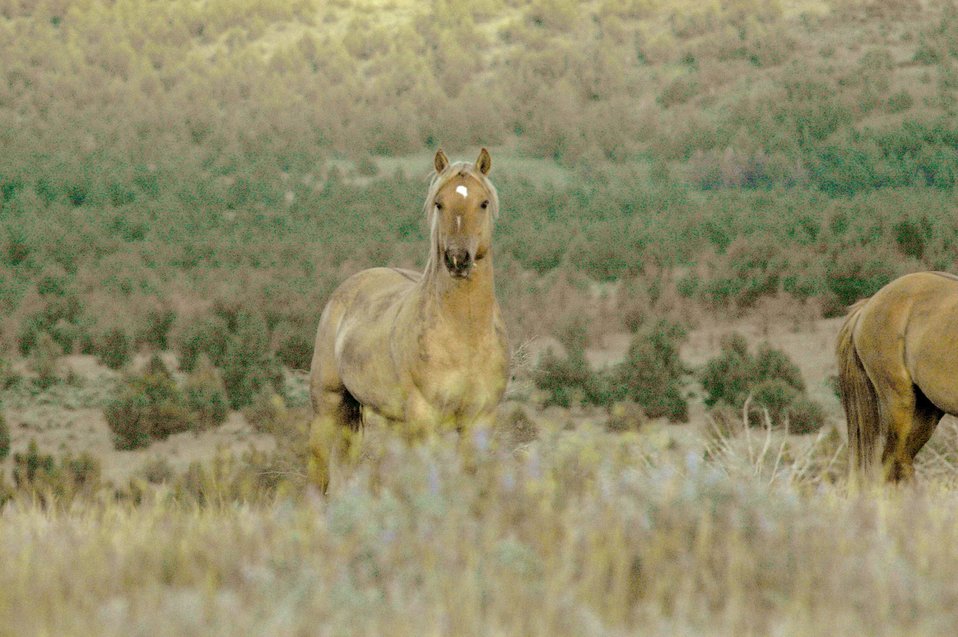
Kiger horses roam the plateaus of the Kiger Wildhorse Herd Management Area near Steens Mountain in Southeastern Oregon.